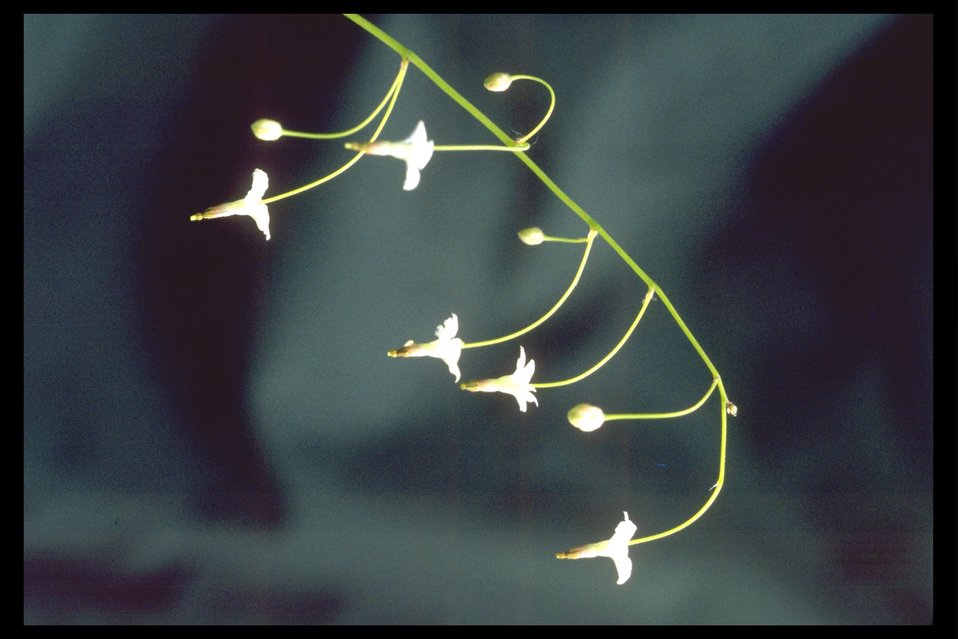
Inside-Out Flower (Vancouveria hexandra) along Upper Trail Creek.